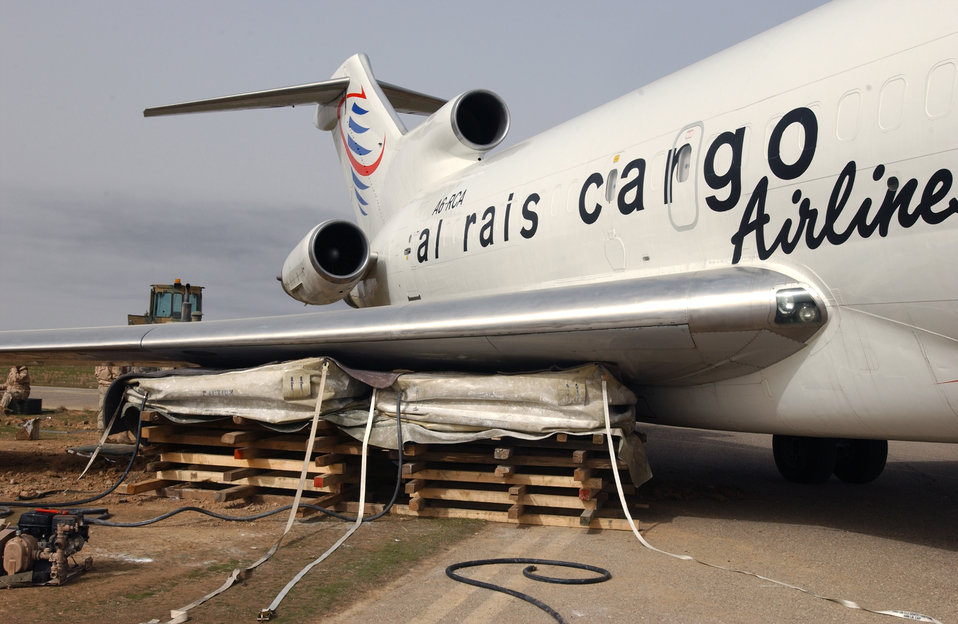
Stuck in the mud

KIRKUK AIR BASE, Iraq -- Airbags were used to raise the wing of the mail cargo plane that was temporarily mired in mud on the edge of a taxiway here. The airbags are capable of lifting 12 tons of weight.